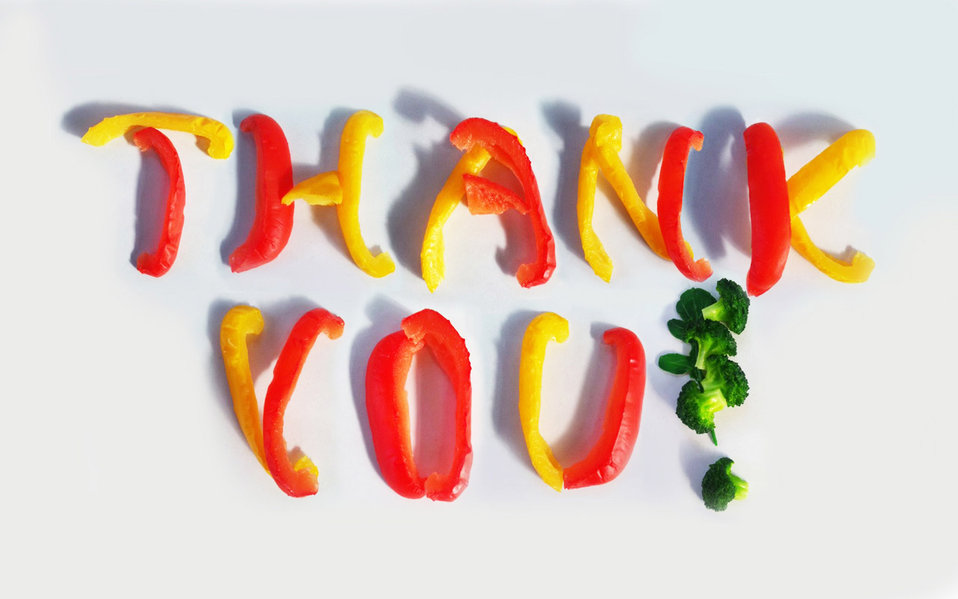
Thank you! (paprika)

Thank you, paprika, broccoli.